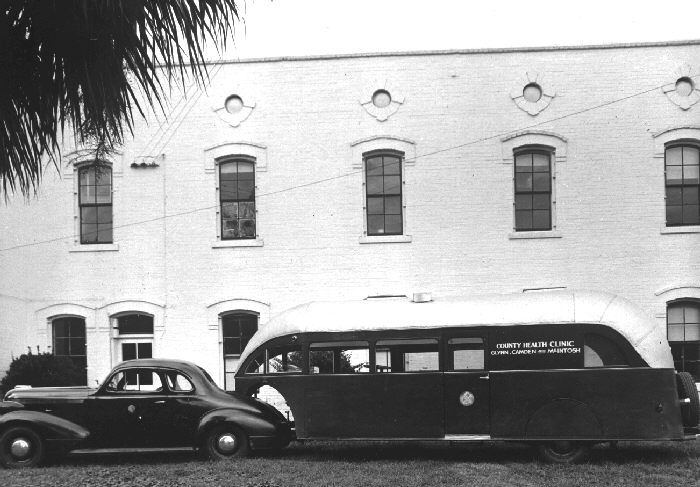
Mobile Public Health Clinic